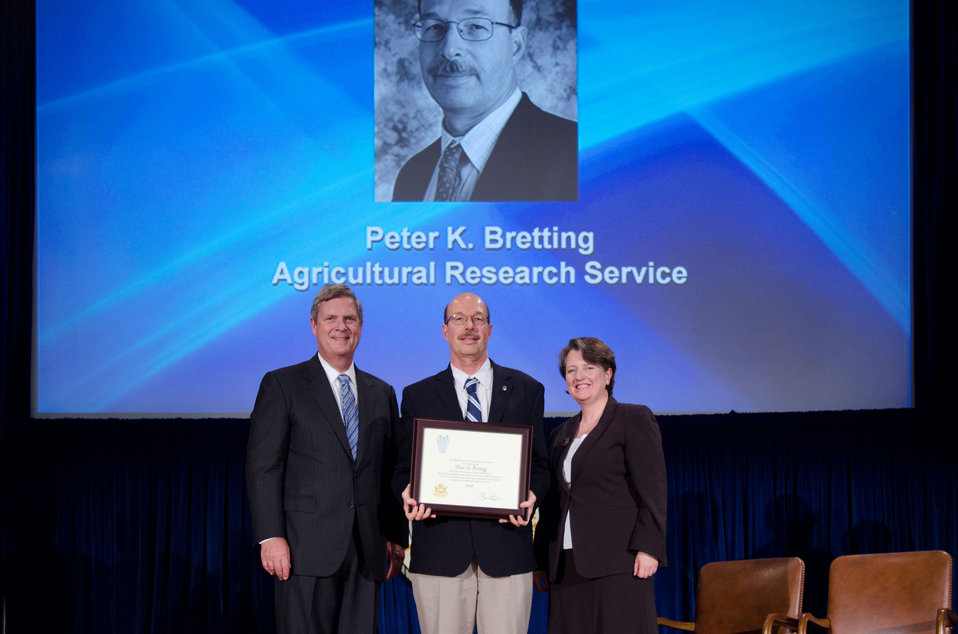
Agriculture Secretary Tom Vilsack (l) and Deputy Secretary Kathleen Merrigan (r), presents the Award to Peter K. Bretting, Biological Scientist (National Program Leader), Agricultural Research Service. The President of the United States of America has conferred Jimmy L. Reaves the rank of Meritorious Senior Professional for sustained superior accomplishment in the conduct of programs of the United States Government and for noteworthy achievement quality and efficiency in the public service. On Wednesday, September 14, 2011 in the Jefferson Auditorium at the US Department of Agriculture in Washington, DC.